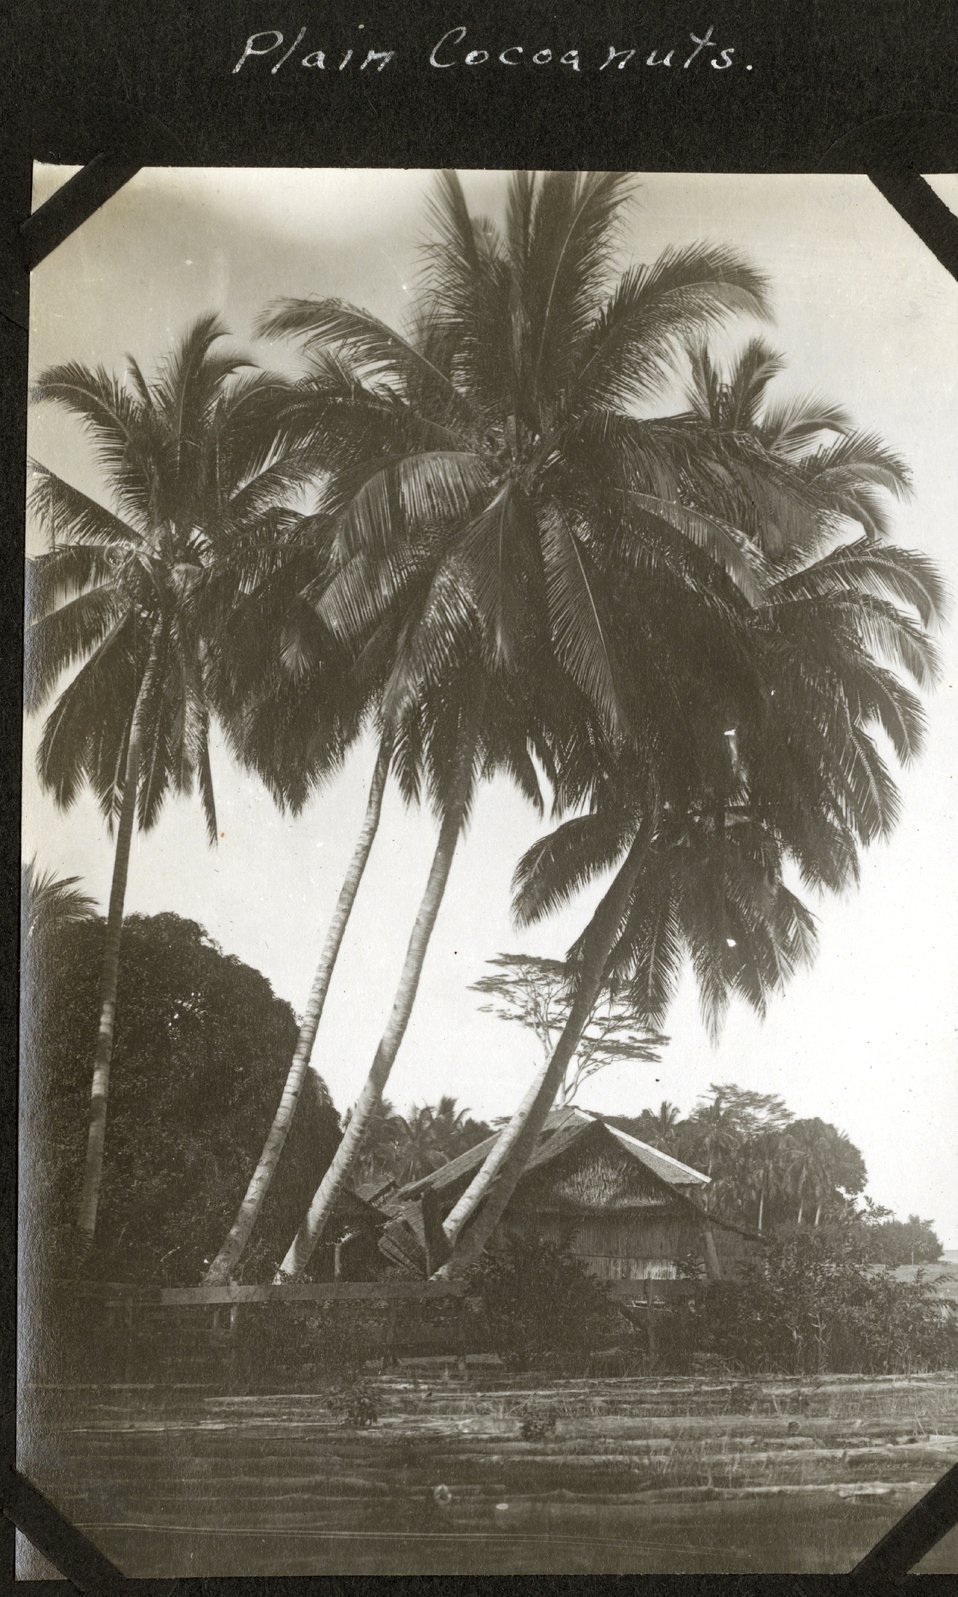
Coconut palm trees and a native home.